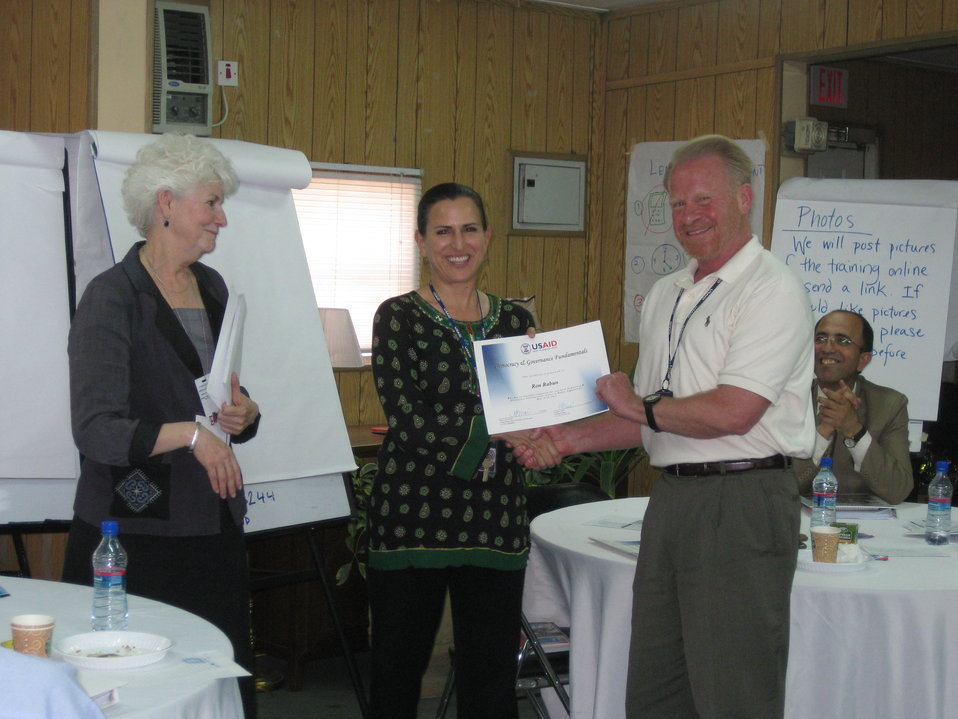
Afghan Youth Voices 060